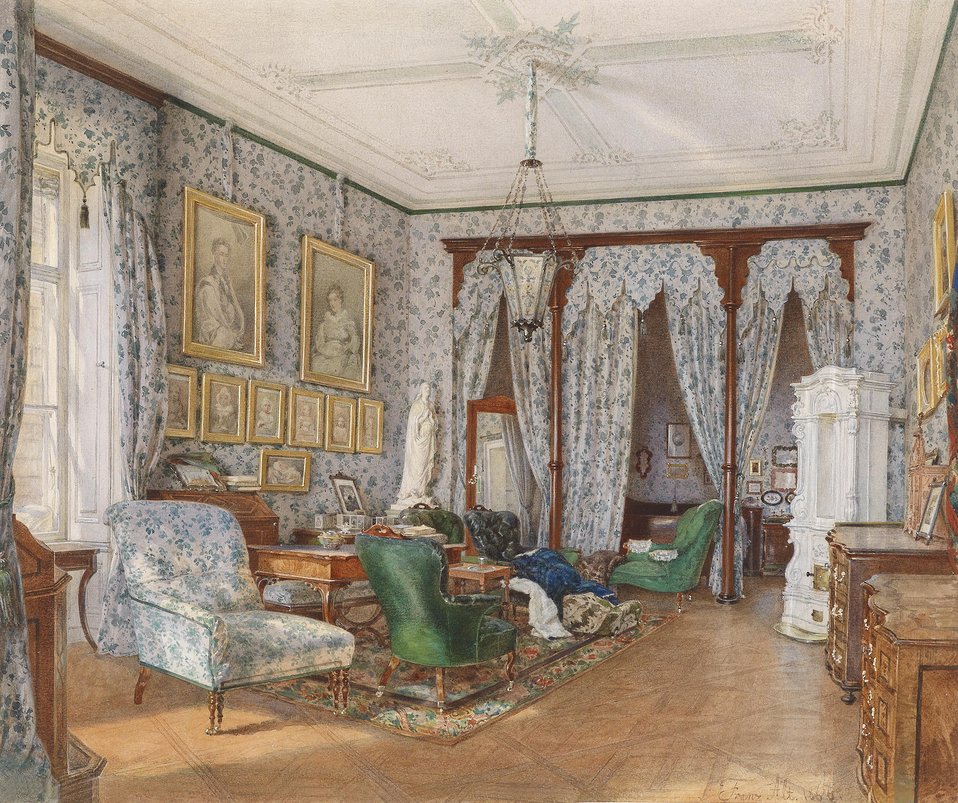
Franz Alt Schreibzimmer Schloss Vukovar 1866